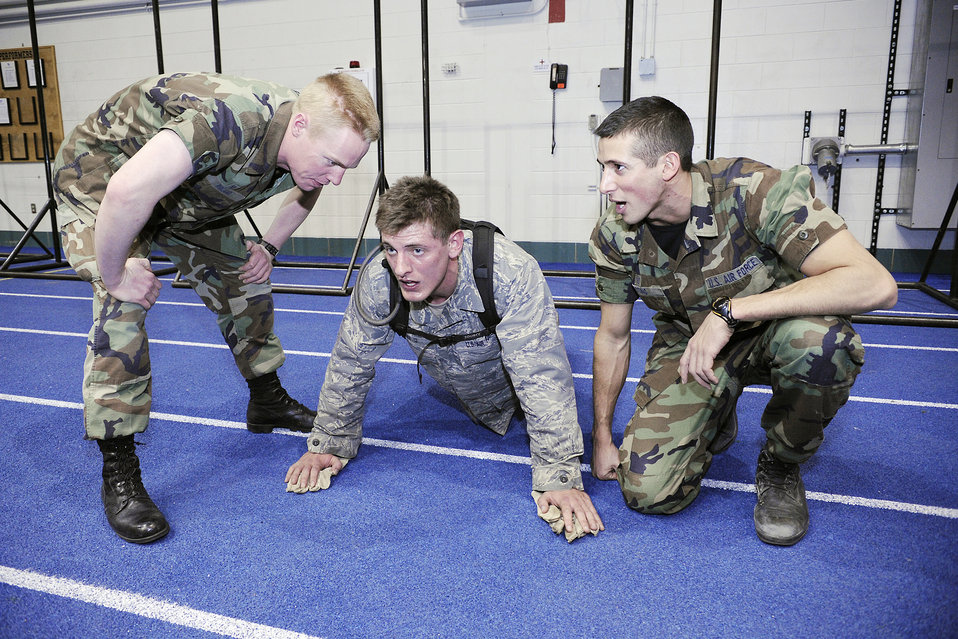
Academy freshmen attain status

Freshman Matthew Webb leads cadet squadron 17 through pushups while cadet seniors Matthew Roland and Dominick Totino provide encouragement during recognition events at the U.S. Air Force Academy, Colo., March 12, 2010. Recognition consists of several days of mentally and physically demanding activities, and culminates with the ascension of the freshmen into the ranks of upper class cadets.